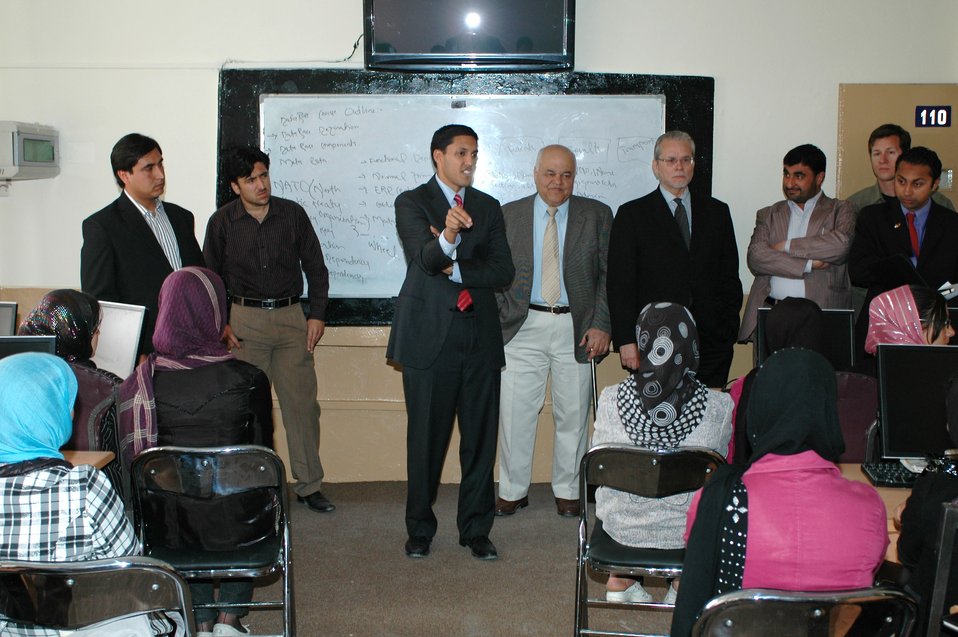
Dr Shah Visits Votech in Kabul